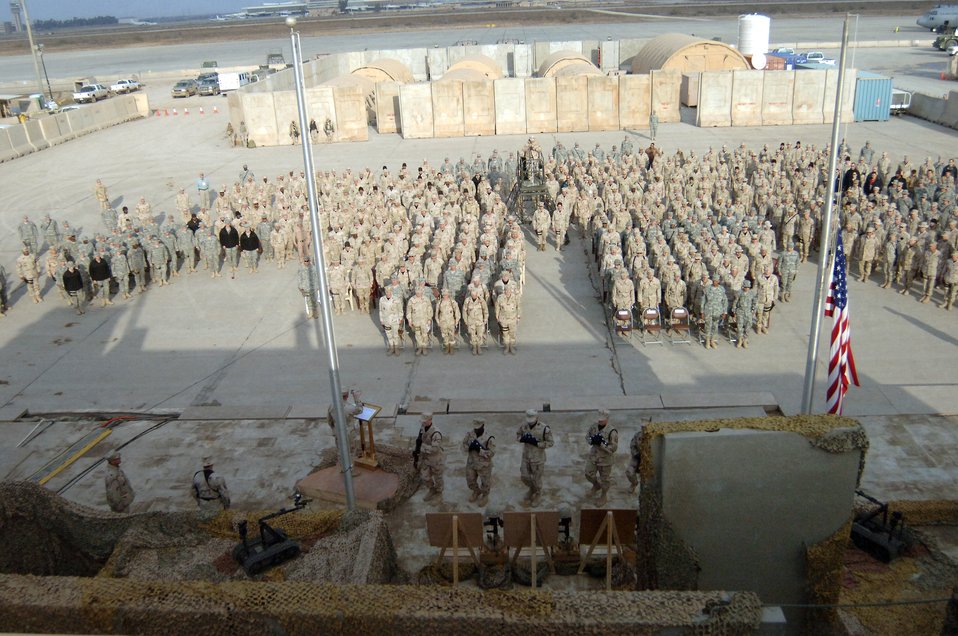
Fallen EOD Airmen remembered

Members of the 447th Air Expeditionary Group at Sather Air Base, Iraq, honor three Airmen Jan. 10 who were killed in the line of duty Jan. 7 when a vehicle-borne improvised explosive device they were investigating detonated. Base honor guard Airmen place flags under photos of the three fallen heroes.